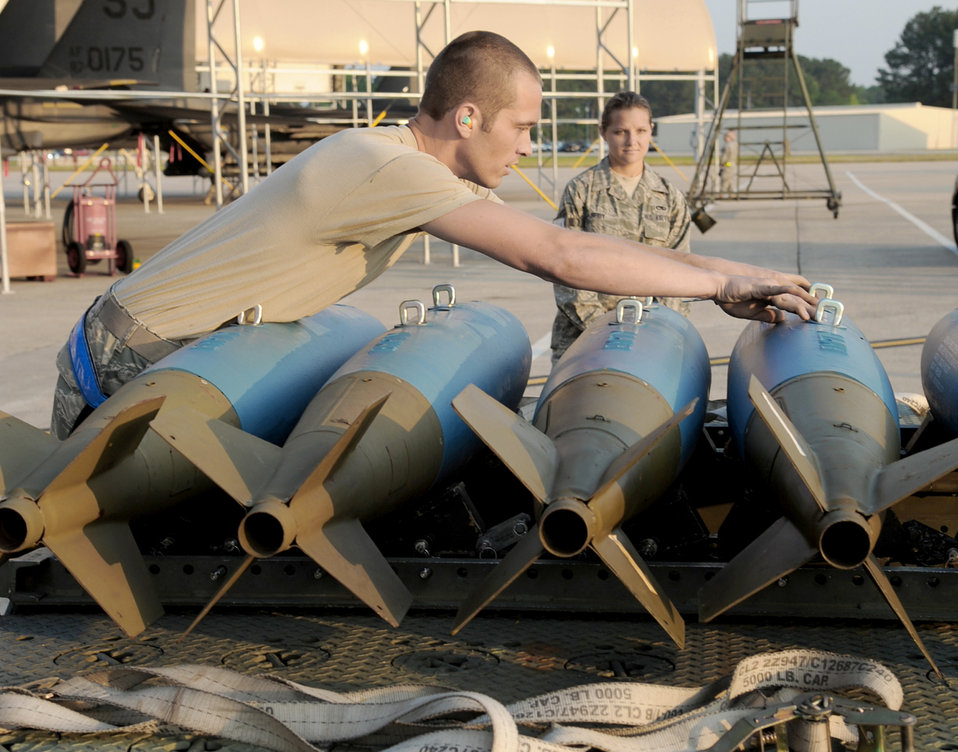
Weapons load competition

Airman 1st Class Russell Pratt performs a serviceability check prior to loading weapons on an aircraft during a weapons load competition May 25, 2011, at Seymour Johnson Air Force Base, N.C. Airman Pratt is a weapons load crewmember assigned to the 4th Aircraft Maintenance Squadron.